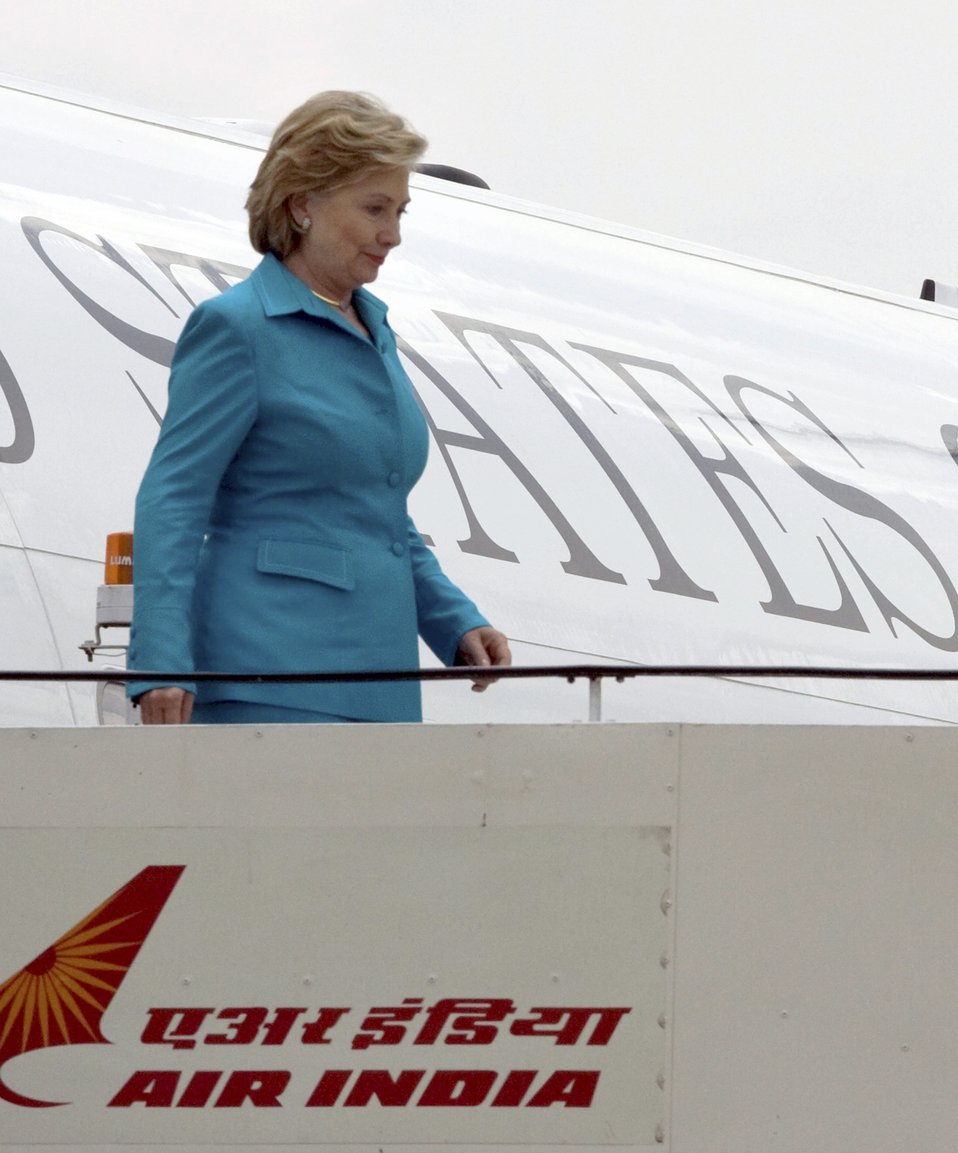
Secretary Clinton Arrives in New Delhi

U.S. Secretary of State Hillary Rodham Clinton arrives at New Delhi airport in New Delhi, India July 19, 2009.